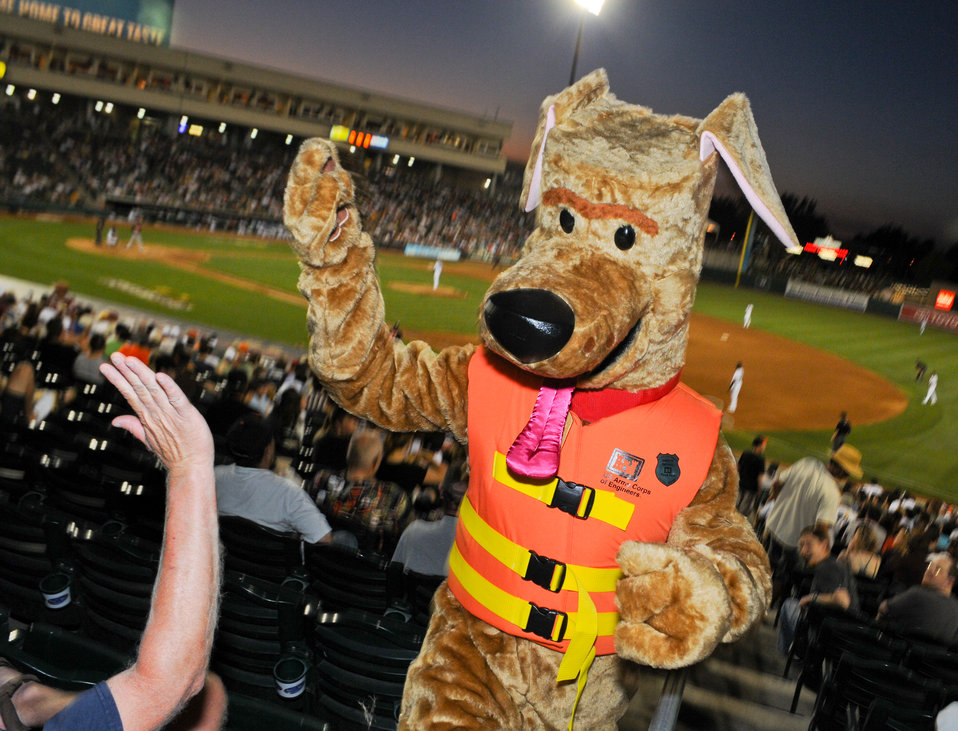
Bobber the Water Safety Dog high-fives fans

Bobber the Water Safety Dog from the U.S. Army Corps of Engineers Sacramento District handed out high-fives during the Sacramento River Cats’ water safety night May 31, 2012, in West Sacramento, Calif.